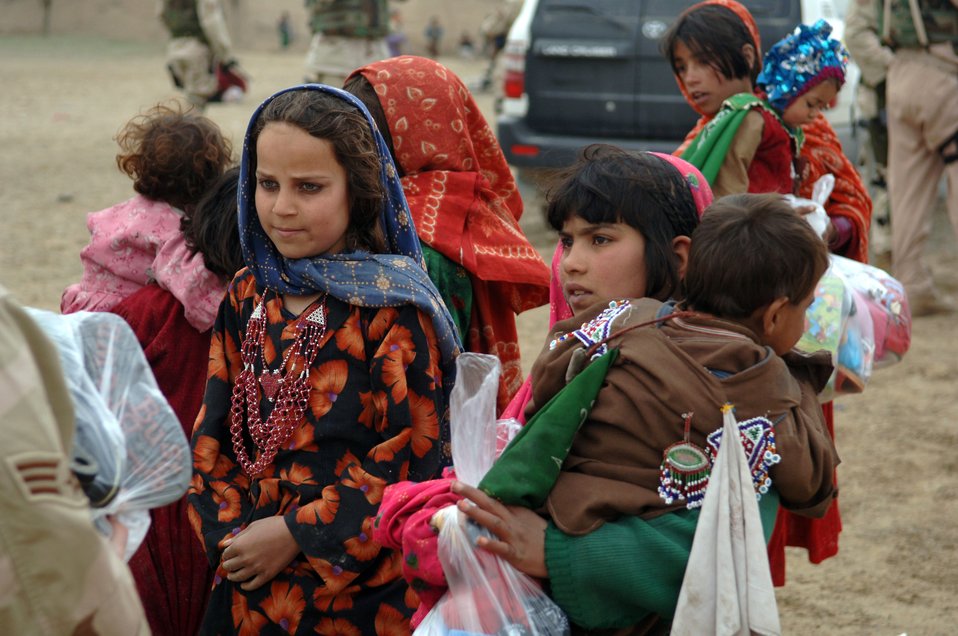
Airmen reach out

Young girls are given clothes during a recent Adopt-A-Village visit in Gadia in the Parwan Province, Afghanistan. Airmen with the 455th Air Expeditionary Wing sorted through donations and filled more than 400 bags with clothes, shoes, school supplies and hygiene items, which were handed out to the Afghans.